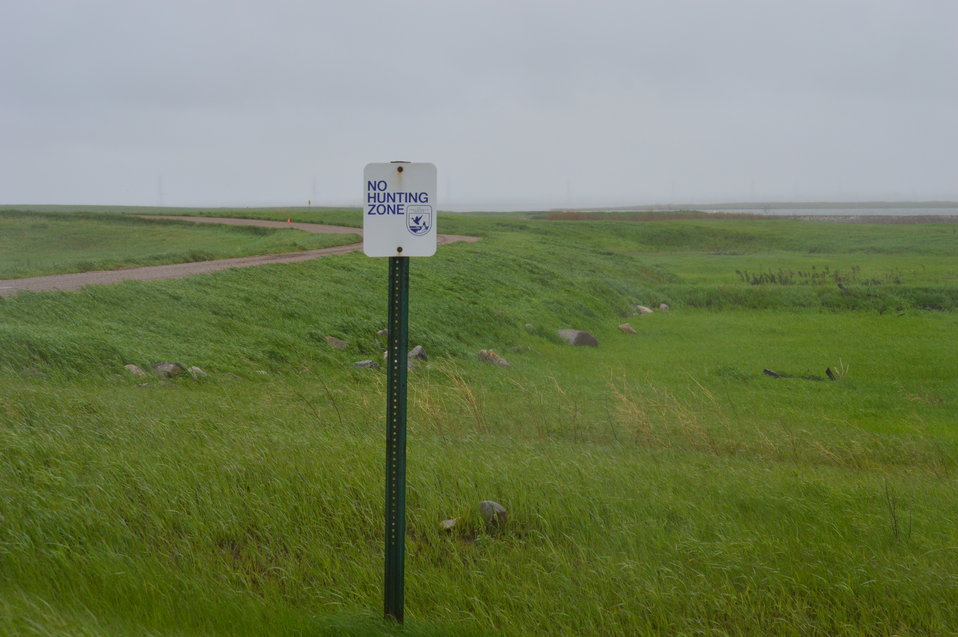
'No Hunting Zone' sign

Scenery and wildlife and Audubon National Wildlife Refuge in North Dakota.